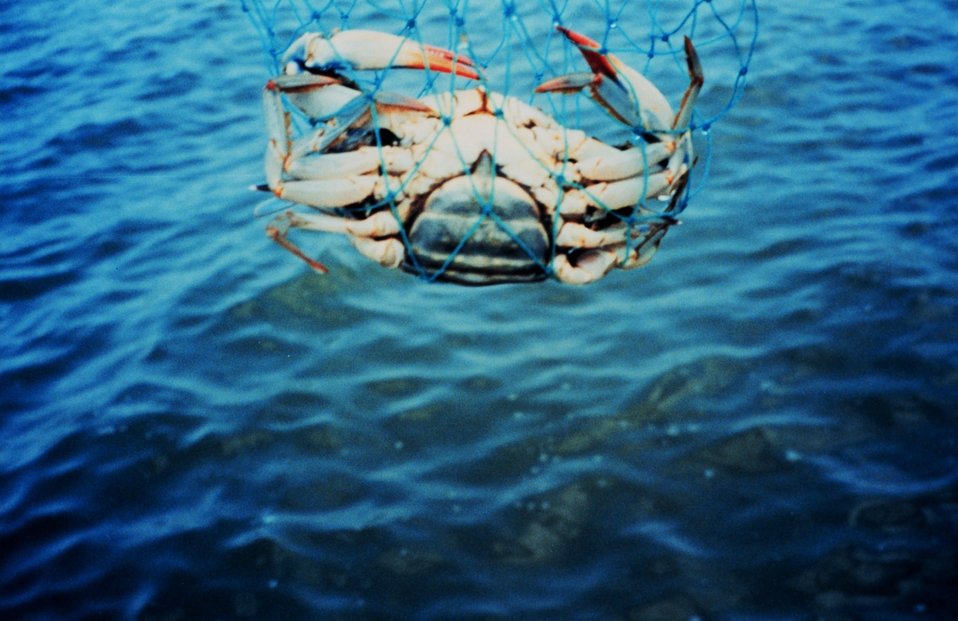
A mature female blue crab (Callinectes sapidus), known colloquially as a 'sook.' Note the apron, shaped like the Capitol building, and the red-tipped claws.